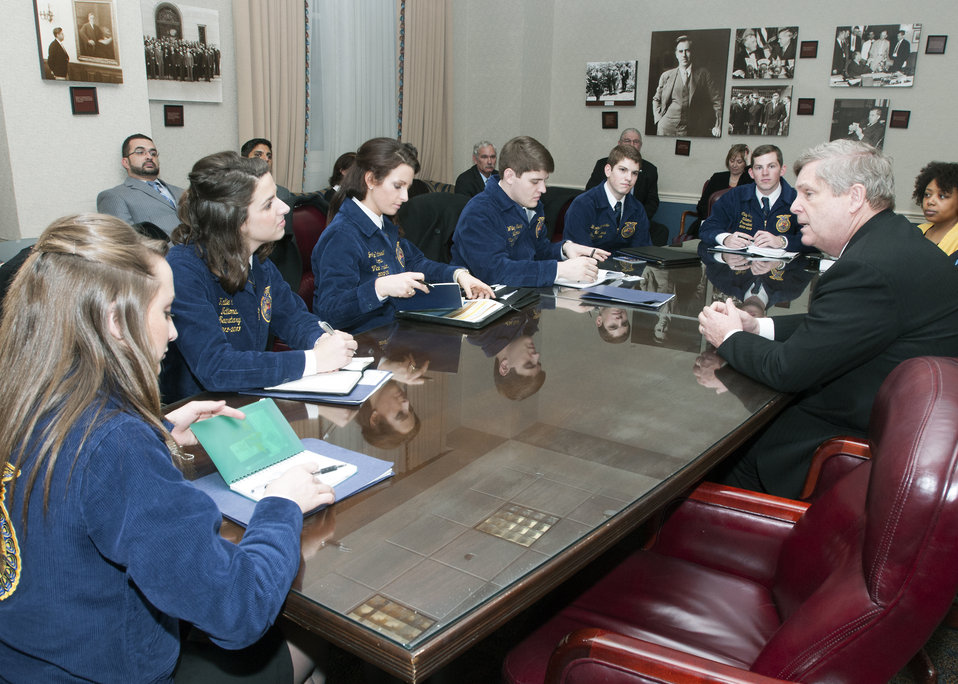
Agriculture Secretary Tom Vilsack meets with FFA National officers in the Wallace room at the U.S. Department of Agriculture (USDA) in Washington, D.C., on Wednesday, Jan. 16, 2013.